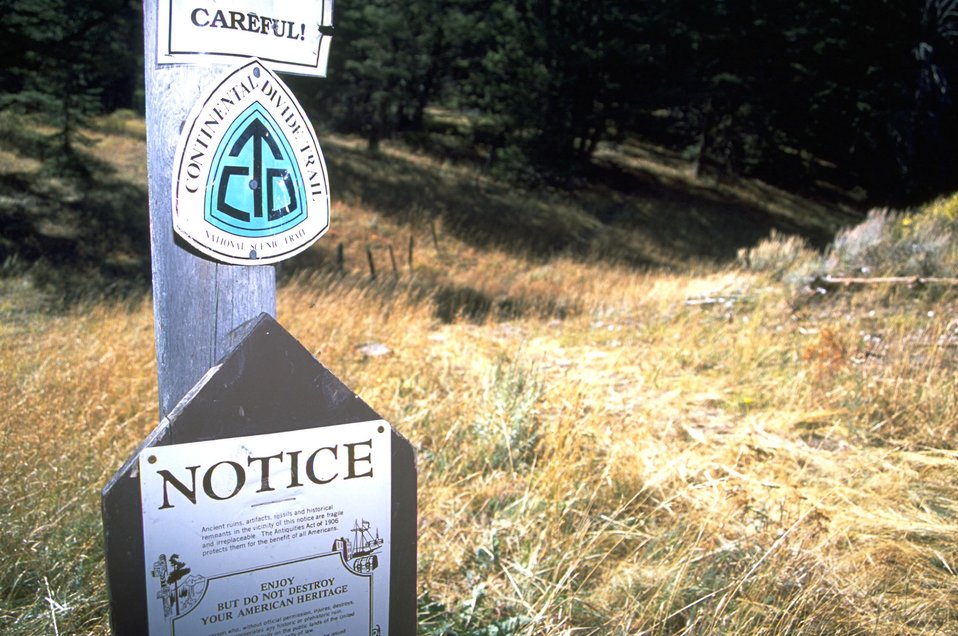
Sign marking the continental divide trail